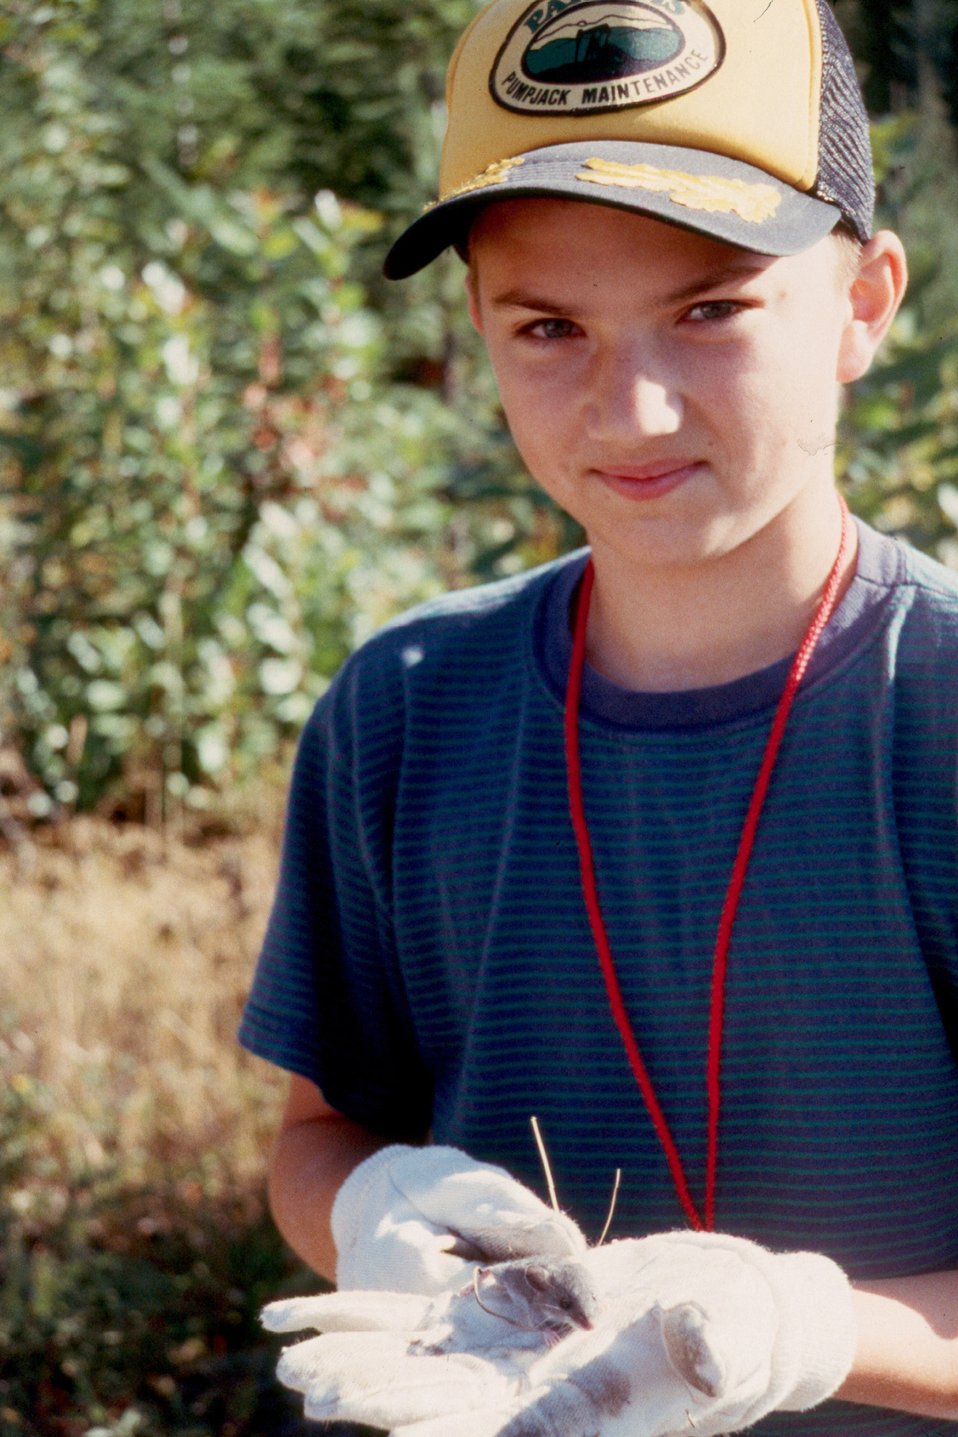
A Junction City boy scout from troupe #334 finds more than garbage to pick up